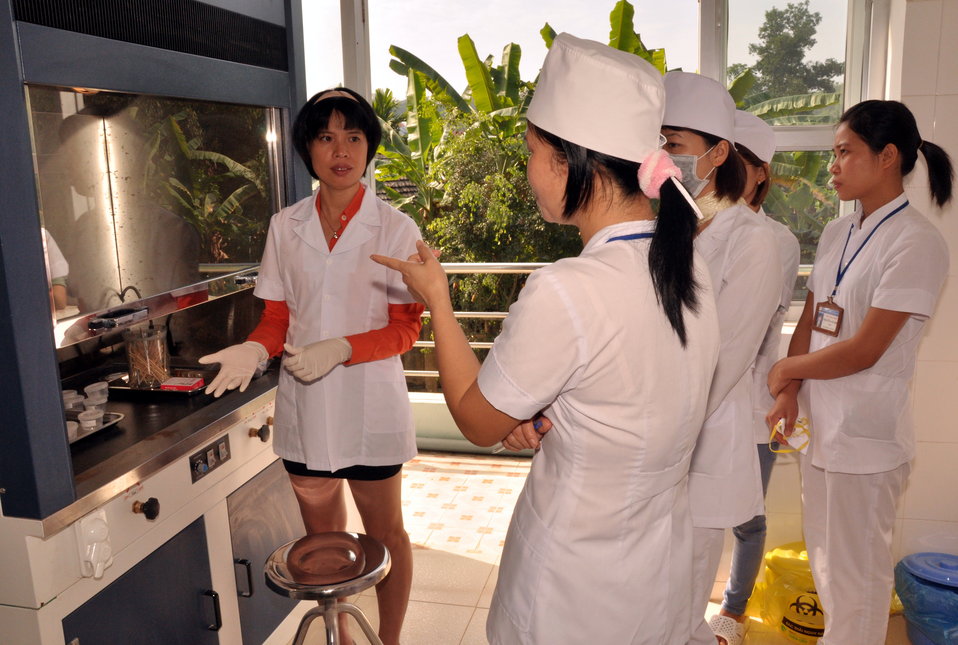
USAID supports new rapid detection TB equipment